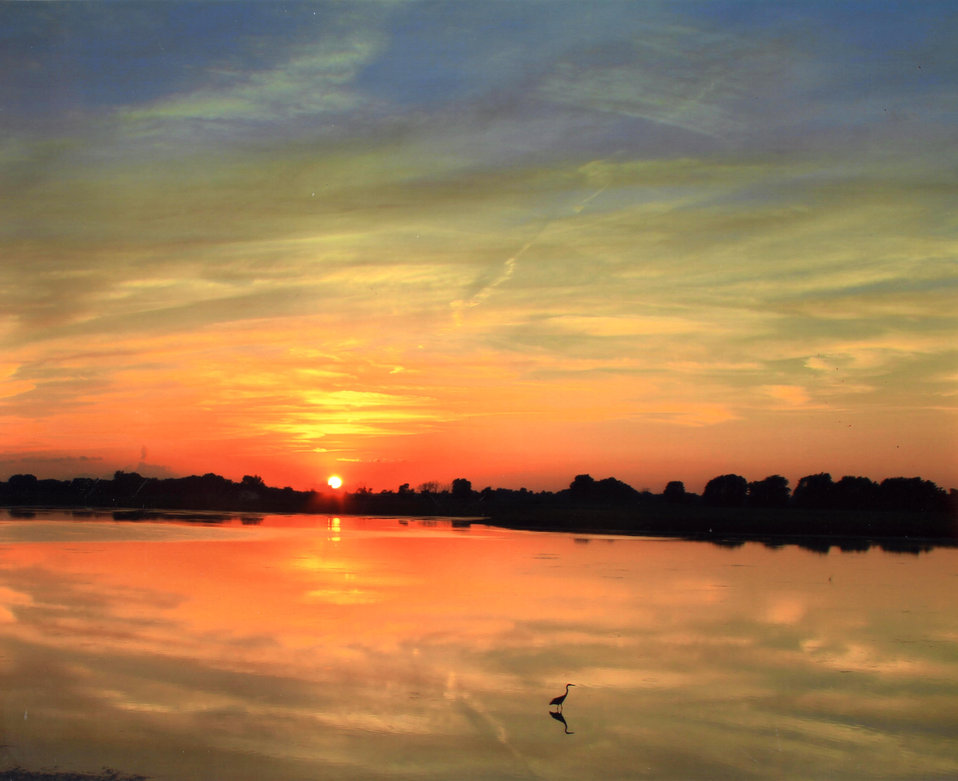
End of Summer Colors

Photo by Rebecca Kelly/USFWS.

Shiawassee National Wildlife Refuge 2013 Photo Contest